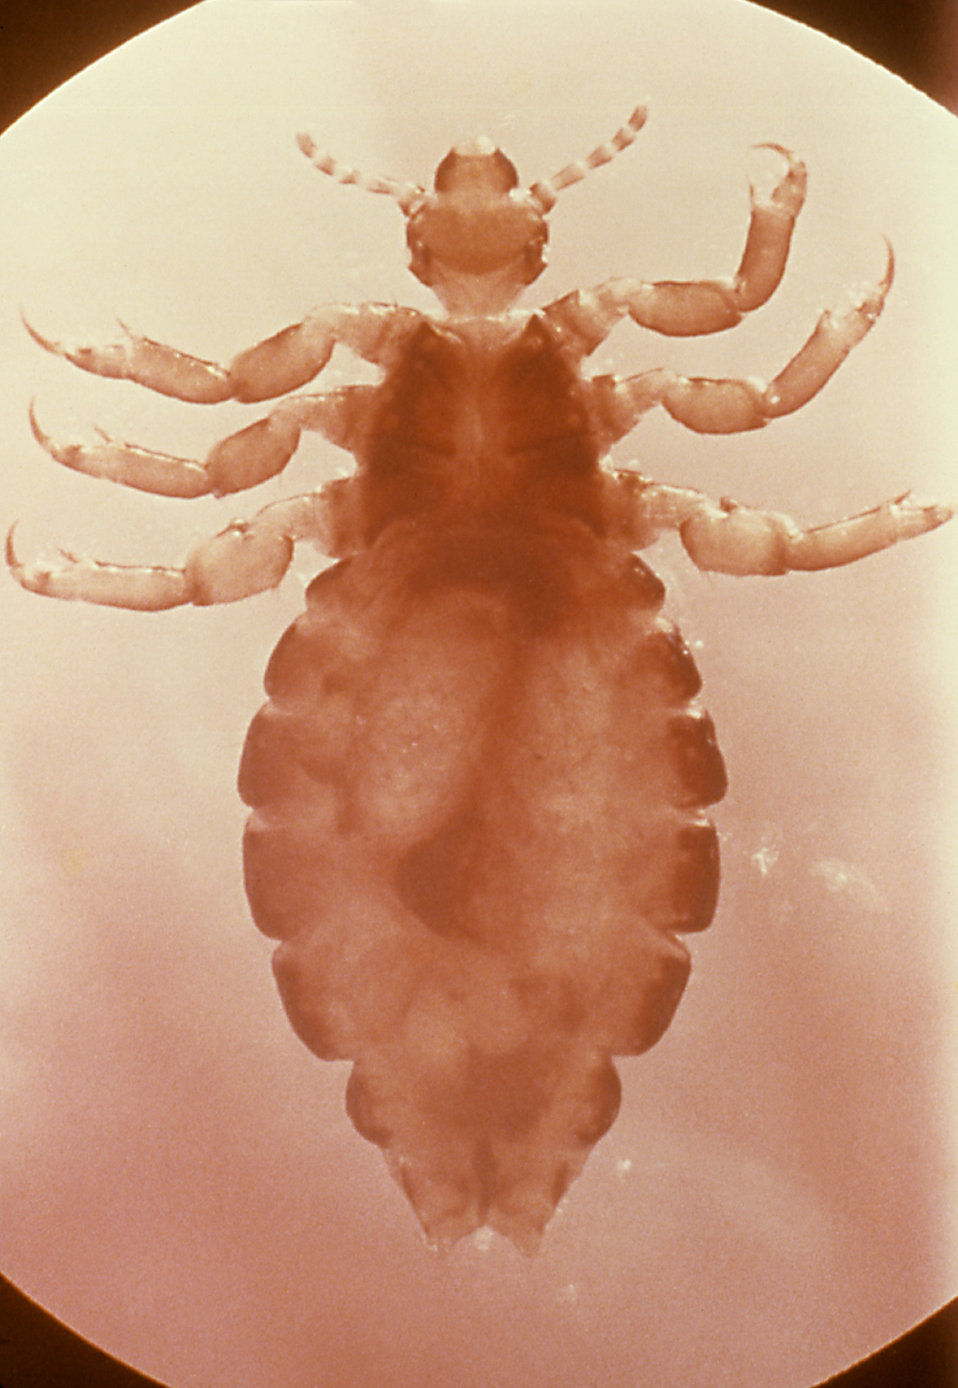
This is an enlarged view of a female head louse, Pediculus humanus var. capitis.